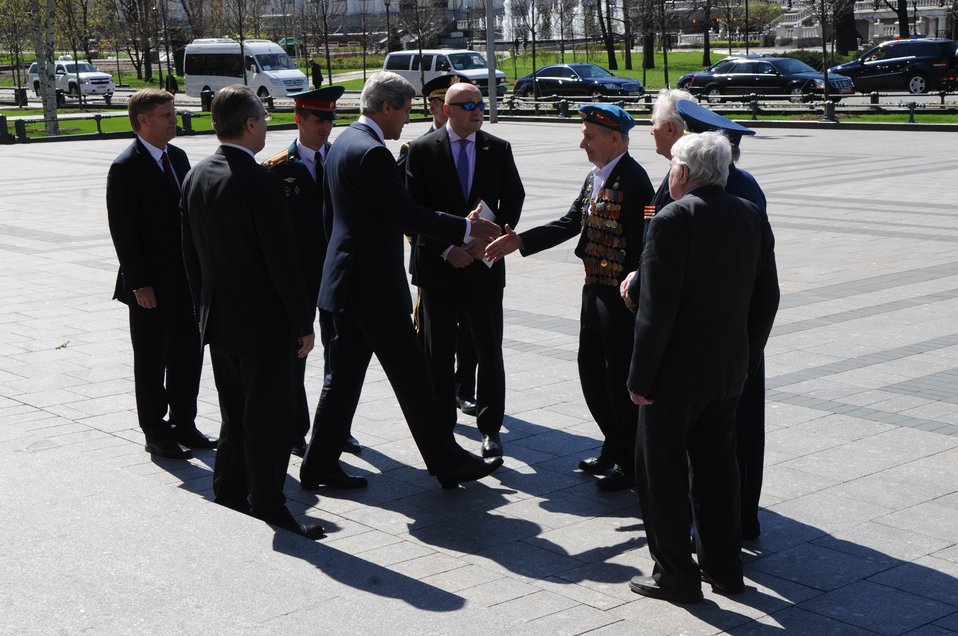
Secretary Kerry Greets Soviet Veterans at Red Square

U.S. Secretary of State John Kerry greets Soviet World War II veterans near the Kremlin in Moscow, Russia, on May 7, 2013.